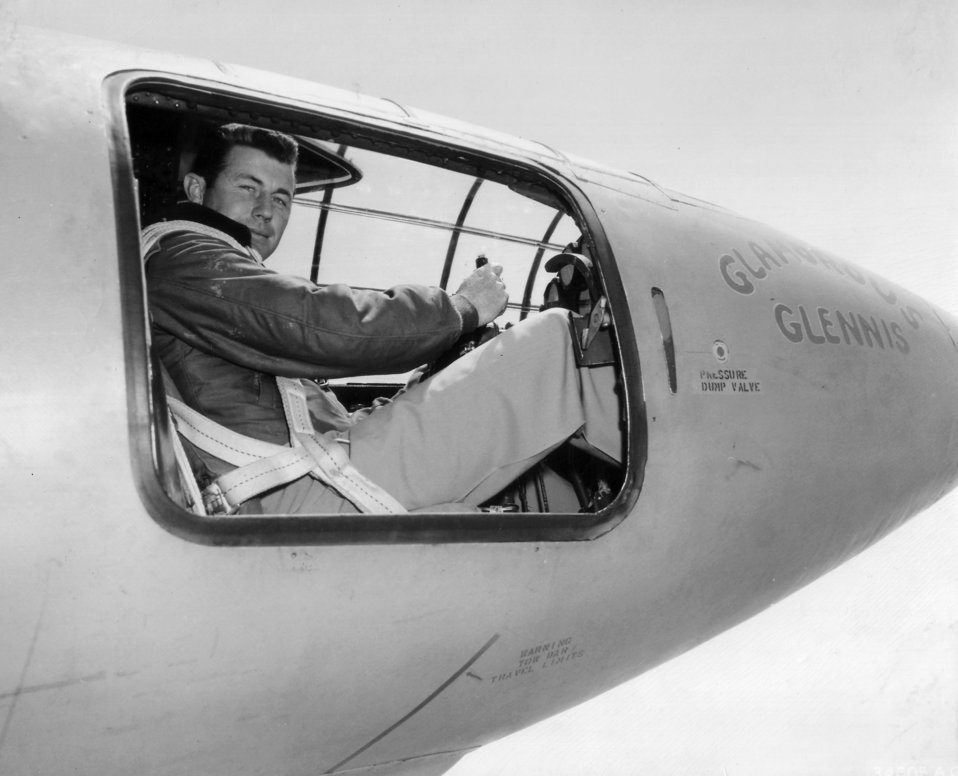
Capt. Charles E. Yeager

1940's -- Capt. Charles E. Yeager became the first man to fly faster than the speed of sound in level flight on October 14, 1947.